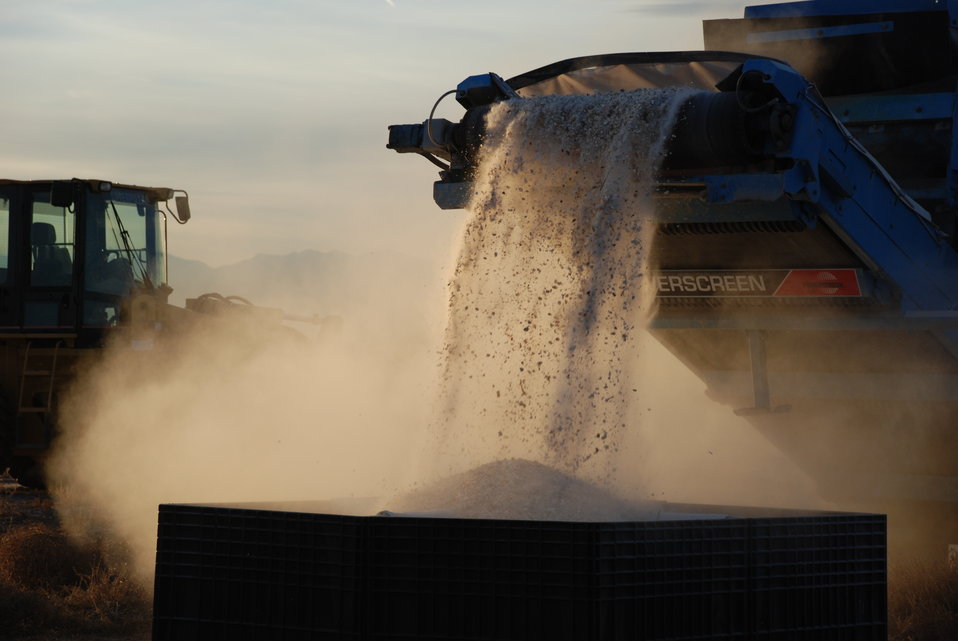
Ivory Crush 2013